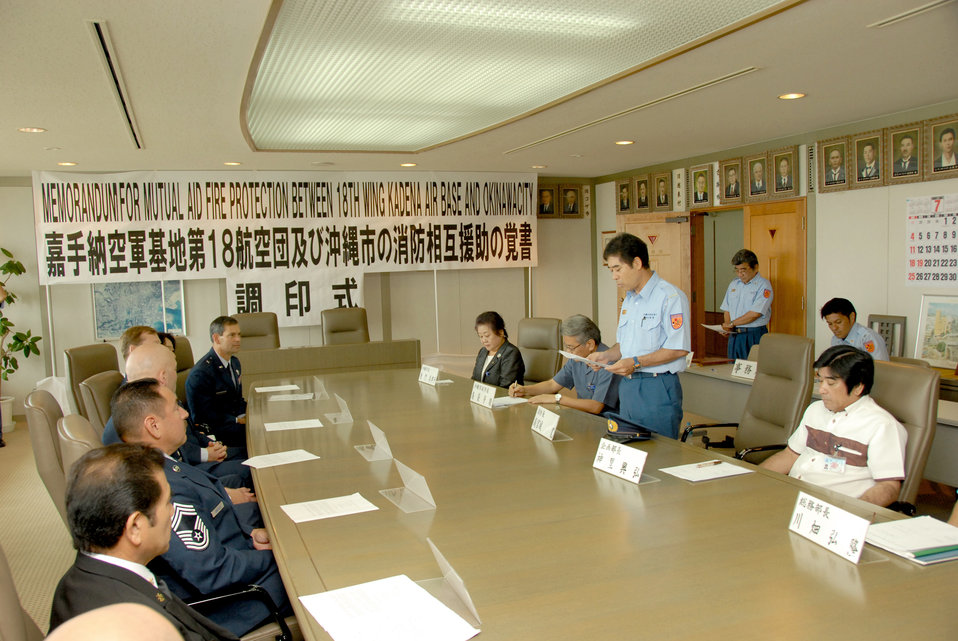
18th Wing, Okinawa City fire department cooperation

Hiroshi Takamiyagi delivers remarks at a signing ceremony for a memorandum of understanding to formalize cooperation between the Kadena Air Base and Okinawa City fire departments July 2, 2010, in Okinawa, Japan. The MOU establishes a framework for mutual aid in the case of fire emergencies. Mr. Takamiyagi is the Okinawa City fire chief.